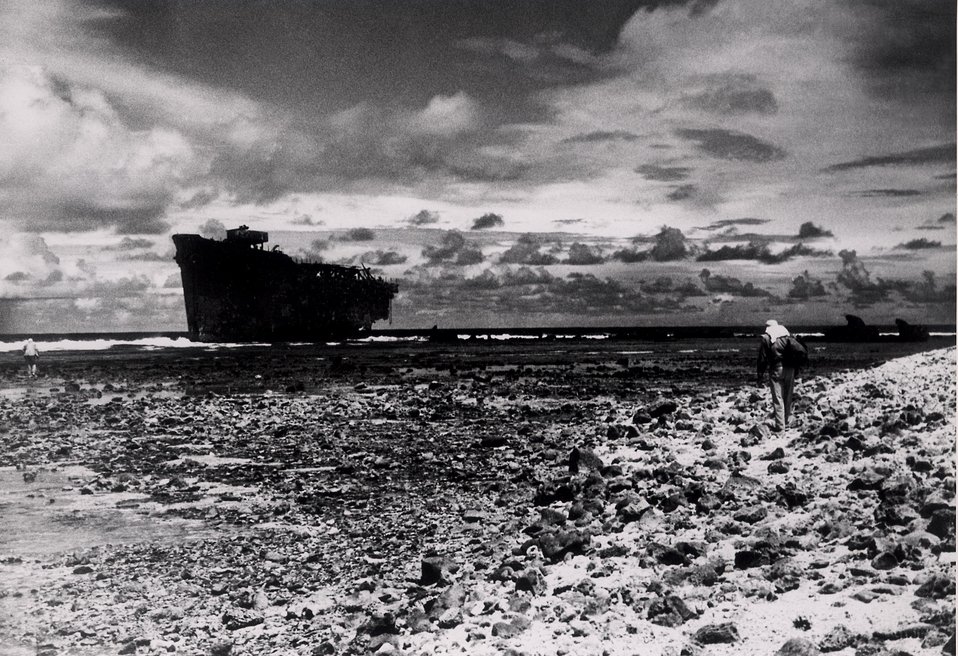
A beached WWII freighter 'Nickajack Trail' slowly rusts in pounding surf off the coast of the Bikini islands.